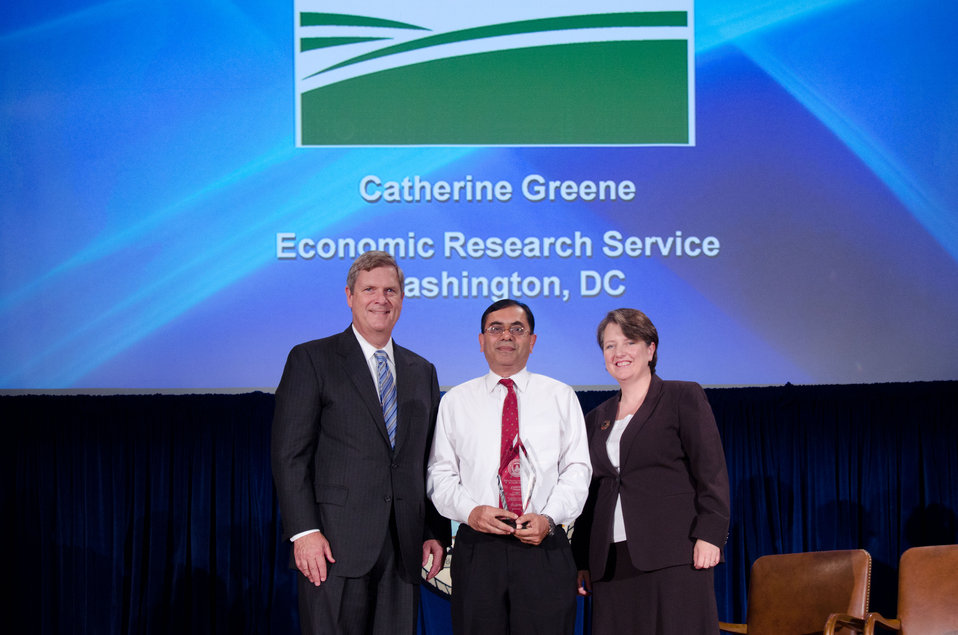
Agriculture Secretary Tom Vilsack (l) and Deputy Secretary Kathleen Merrigan (r), presents the Award for Personal and Professional Excellence to Economic Research Service, Washington, DC. For exceptional commitment to understanding the research needs in the U.S. organic sector and outstanding leadership in building USDA’s capacity to respond. Uptal Vasvada accepts the award for Catherine Green. On Wednesday, September 14, 2011 in the Jefferson Auditorium at the US Department of Agriculture in Washington, DC.